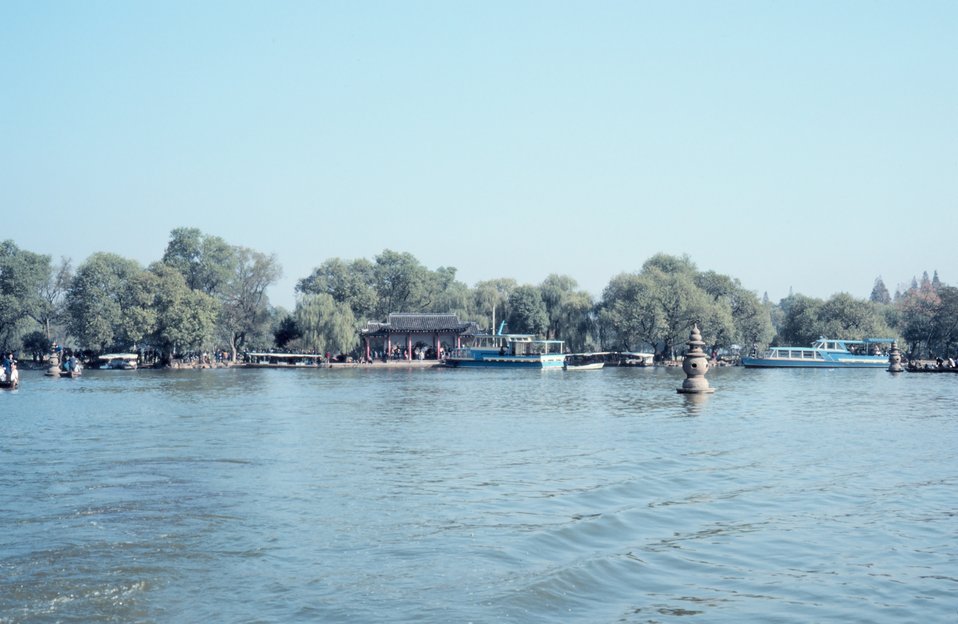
West Lake at Hangzhou.